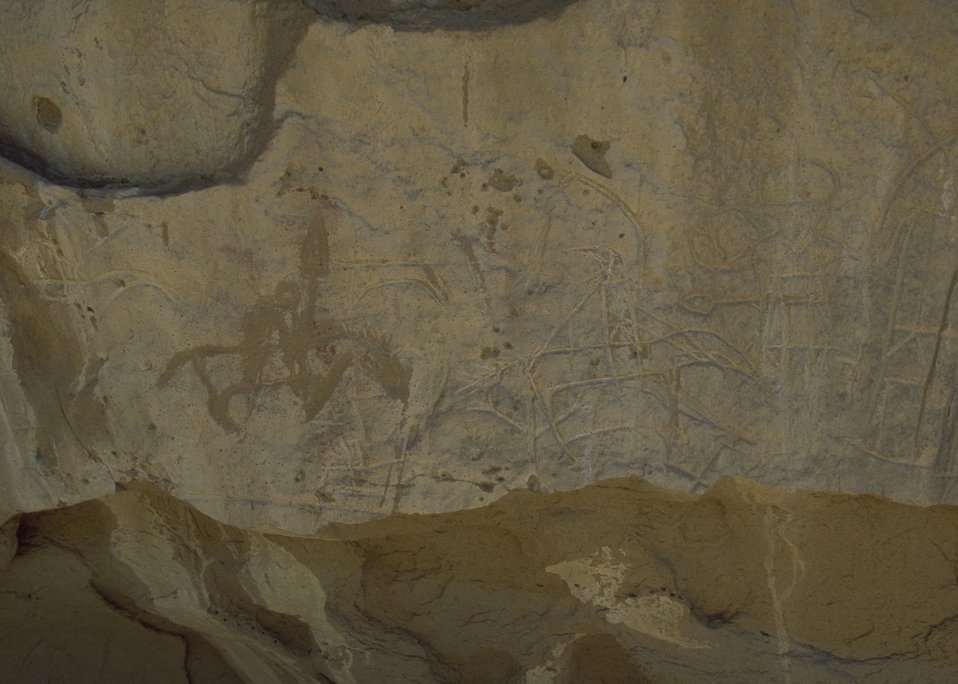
White Mountain Petroglyphs, Rock Springs Field Office.